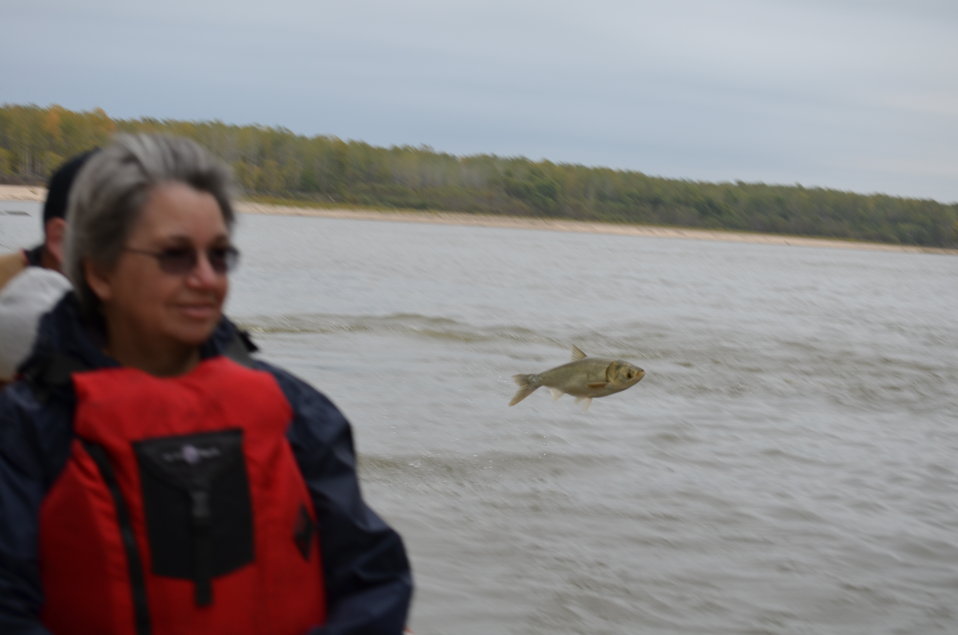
A jumper

Jumping silver carp in mid-air beside boat. USFWS/Ashley Spratt